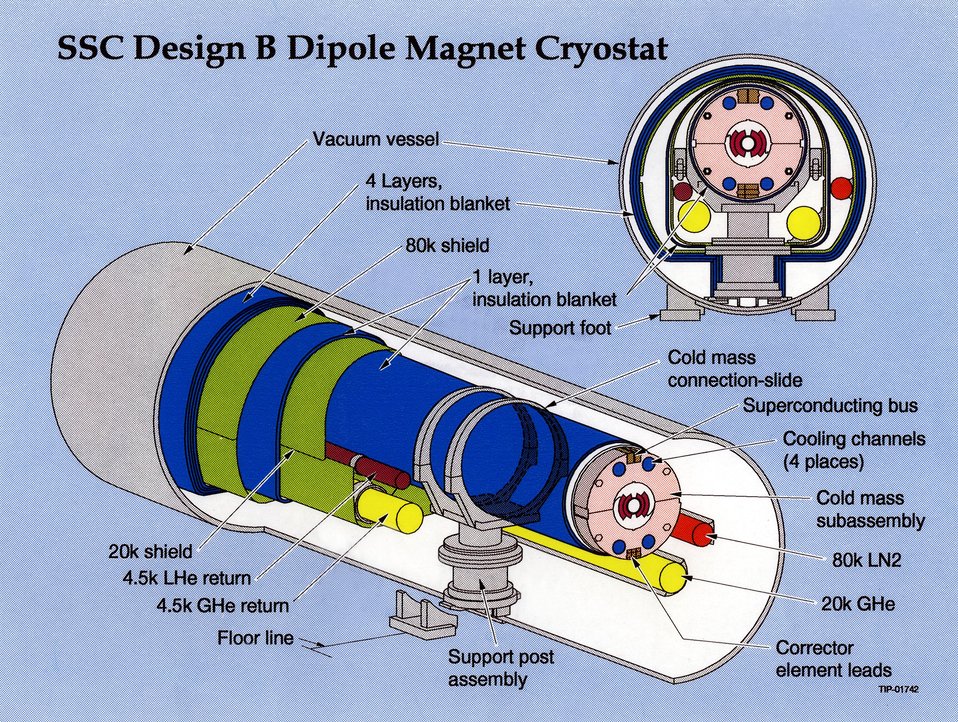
SCHEMATIC OF SSC DESIGN B DIPOLE MAGNET CRYOSTAT.

THE SSC IS UNDER CONSTRUCTION IN ELLIS COUNTY, TEXAS. IT WILL CONSIST OF A COLLIDER COMPRISING TWO RINGS OF SUPERCONDUCTING MAGNETS HOUSED UNDERGROUND IN A RACE-TRACK SHAPED TUNNEL THAT IS 14 FEET IN CROSS-SECTION AND 54 MILES IN CIRCUMFERENCE. AFTER PASSING THROUGH A CHAIN OF FOUR INJECTOR ACCELERATORS, TWO BEAMS OF PROTONS TRAVELING IN OPPOSITE DIRECTIONS WILL BE FURTHER ACCELERATED TO NEARLY THE SPEED OF LIGHT, COLLIDING AT 20 TRILLION ELECTRON VOLTS.